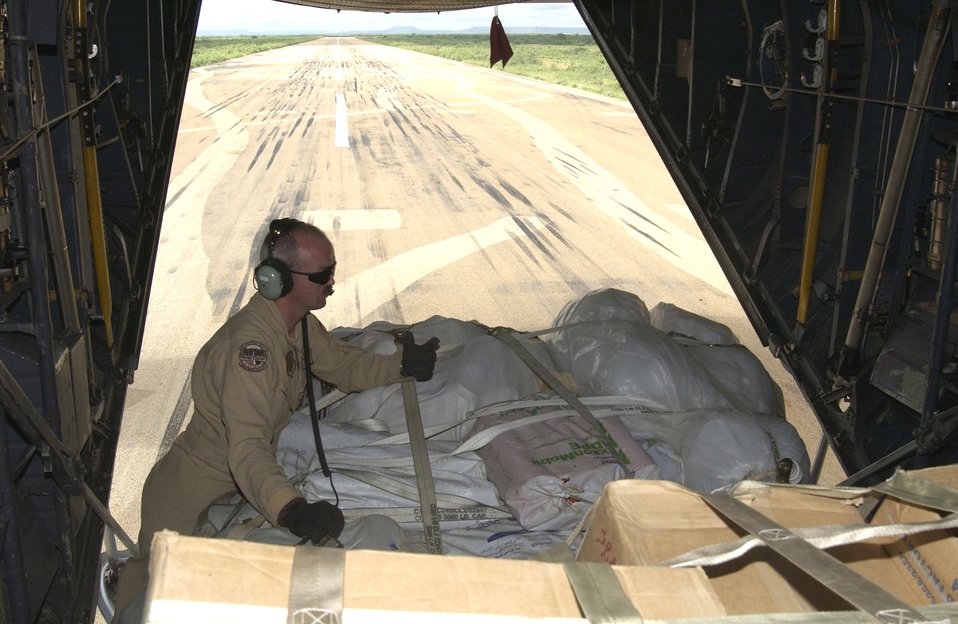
379th AEW supports flood relief operations in Ethiopia

Tech. Sgt. James Cope prepares to release pallets containing food relief supplies for people affected by the flood in Gode, Ethiopia. Sergeant Cope is a loadmaster with the 746th Expeditionary Airlift Squadron in Southwest Asia.